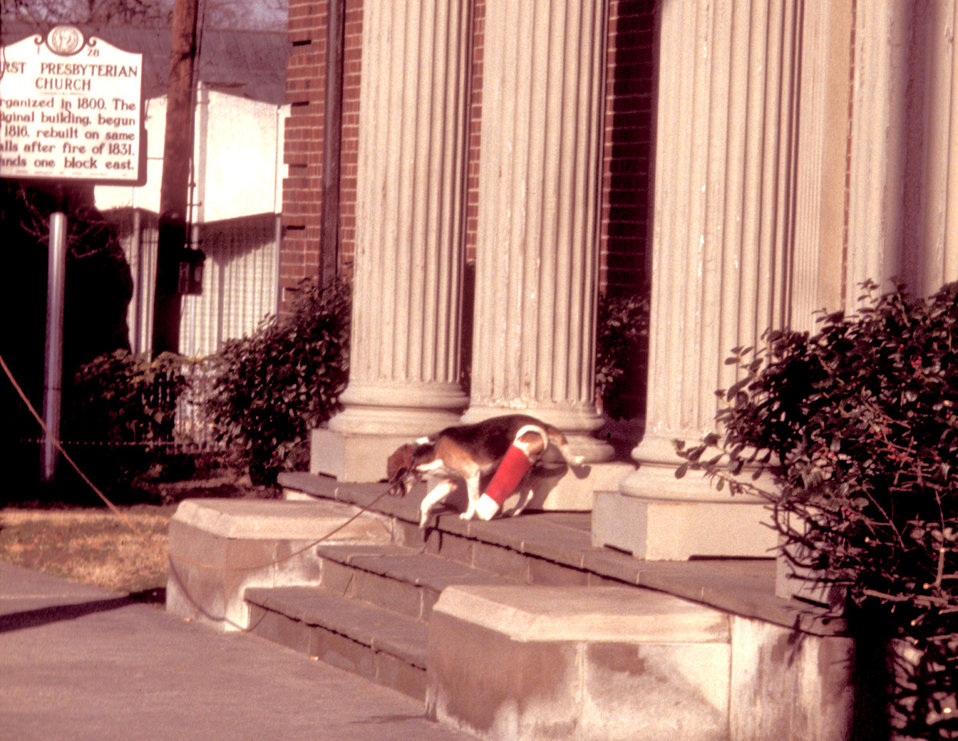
Here, as in PHIL 9059, this functionally-impaired beagle was confronted by a series of steps, which it was about to descend in this 1978 image. With a broken right rear leg that had been set in a cast, this photograph illustrated how diverse a user population need be taken into account when designing public walkways. Human beings of all types and in all states of mobility, as well as animals, must be considered in order for a functional walkway to be considered universal in its usability and functionality. Note the steeper steps in PHIL 9058, which the mobility-challenged beagle found daunting, and therefore, unable to conquer.